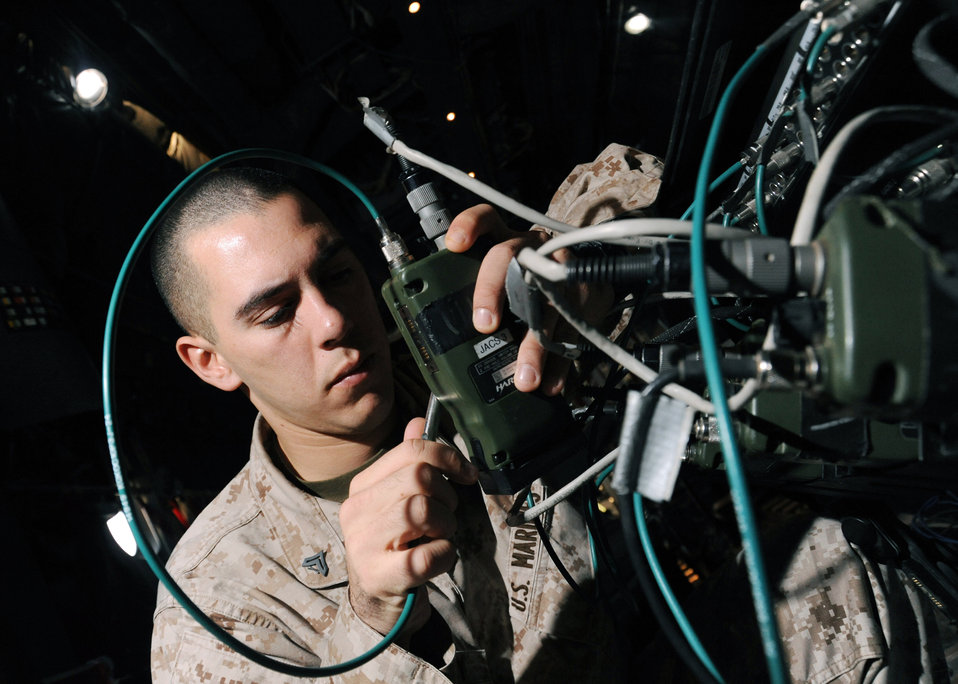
Convoy 911: Joint unit extends battlespace communication

Marine Cpl. Joseph Colby checks the presets and frequencies of radios on a joint airborne battle staff detachment C-130 prior to a mission Nov. 24, 2009 at Joint Base Balad, Iraq. The JABS is a joint operation focused on providing airborne communications support to ground forces. Corporal Colby is an 777th Expeditionary Airlift Squadron air control electronics operator.